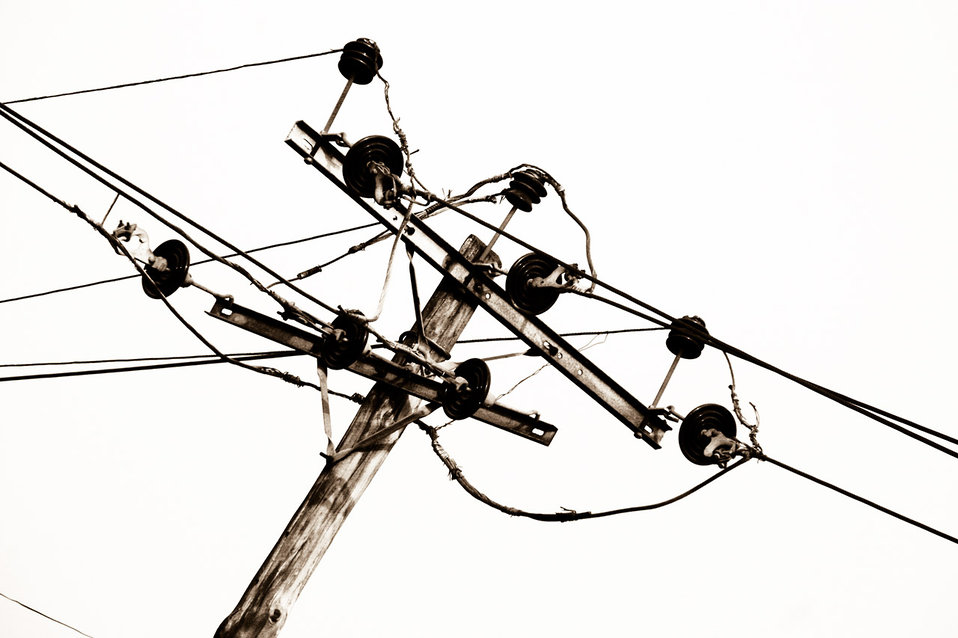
Light poles carrying electricity are a common sight in my country, nigeria.